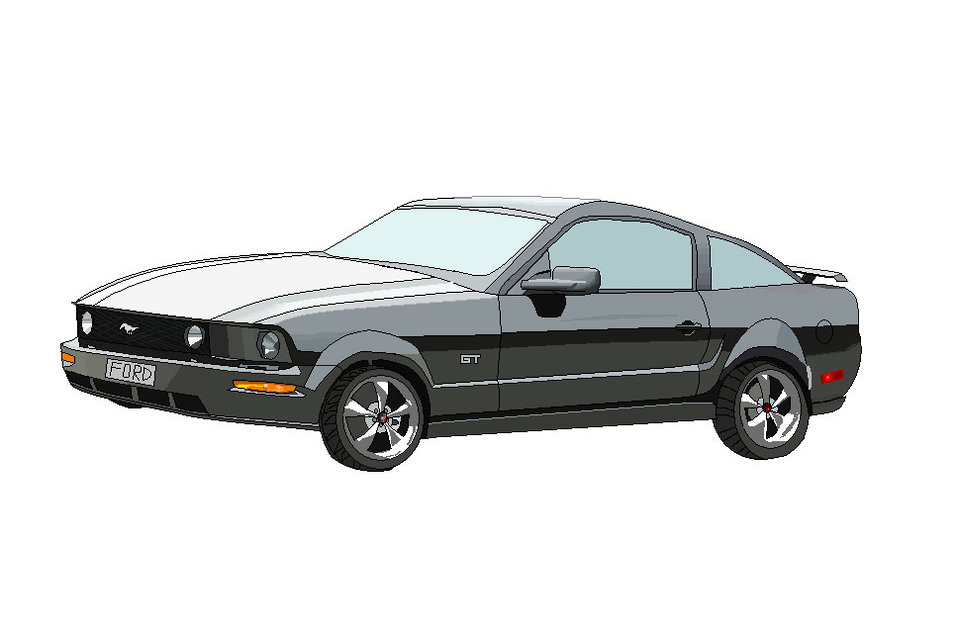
A 2007 Ford Mustang I did entirely on MS Paint